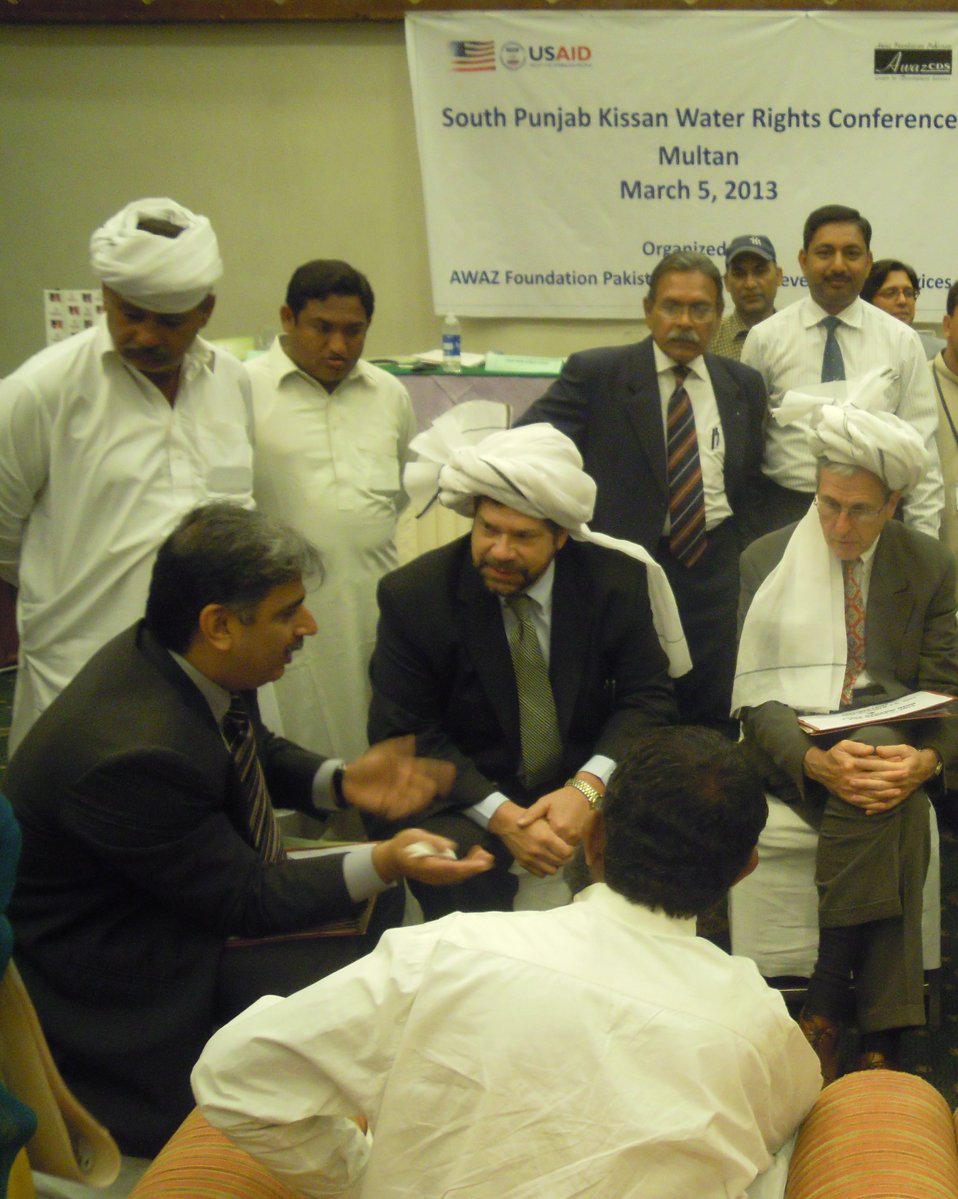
Caption 1: Multan Water Rights Conference

Officials of USAID, including the Mission Director Mr. Jonathan Conly, participated at the South Punjab Kissan Conference organized by Awaz-Center for Peace and Development, a civil society organization implementing a project on improving water rights in Multan under USAID’s Citizens’ Voice Project.